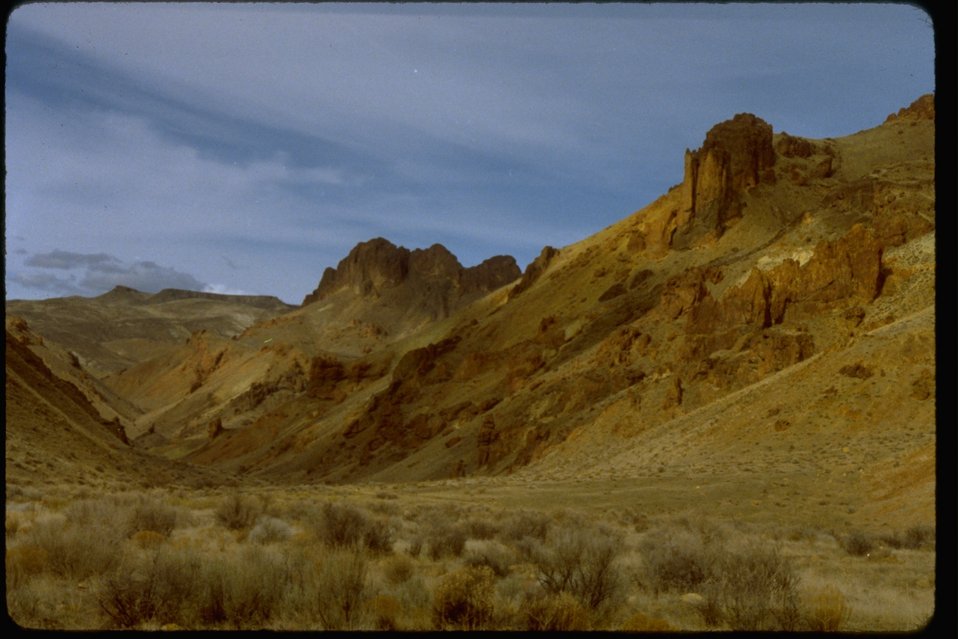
Undetermined.